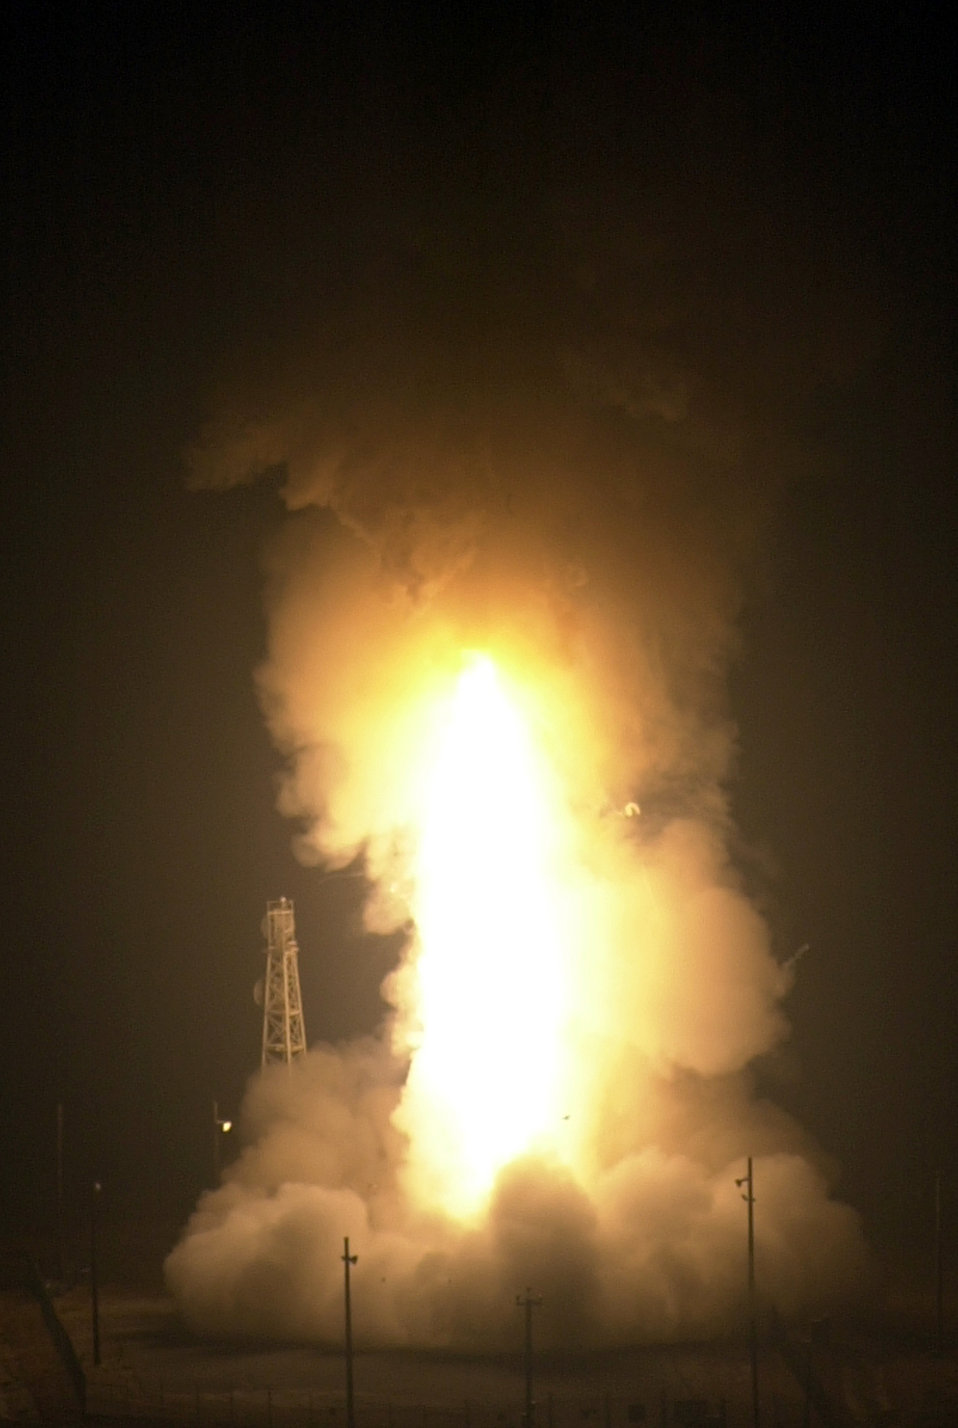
Morning launch

VANDENBERG AIR FORCE BASE, Calif. (AFPN) -- An unarmed Minuteman III intercontinental ballistic missile launched from here at 1:32 a.m. PDT on June 23. The missile's unarmed re-entry vehicle traveled nearly 4,200 miles in about 30 minutes, hitting a predetermined target at the Kwajalein Missile Range in the western chain of the Marshall Islands.